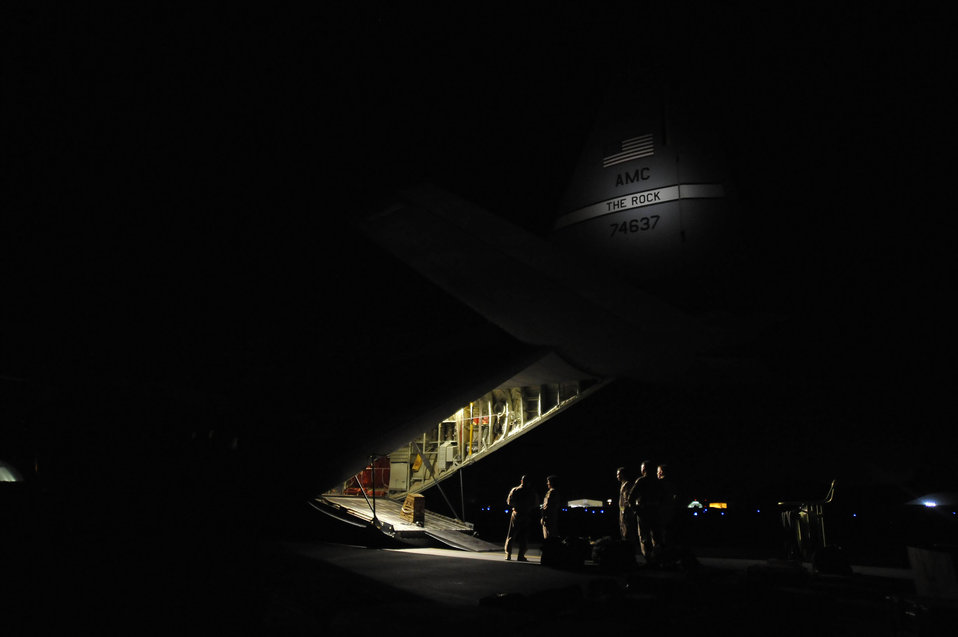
Medical Evacuation

Airmen prepare an HC-130 Hercules to perform a routine channel flight Oct. 6, 2009. During the sortie the team will fly across Afghanistan to connect U.S., coalition and local patients with needed medical care. These Airmen are assigned to the 451st Aeromedical Squadron at Kandahar Airfield, Afghanistan.